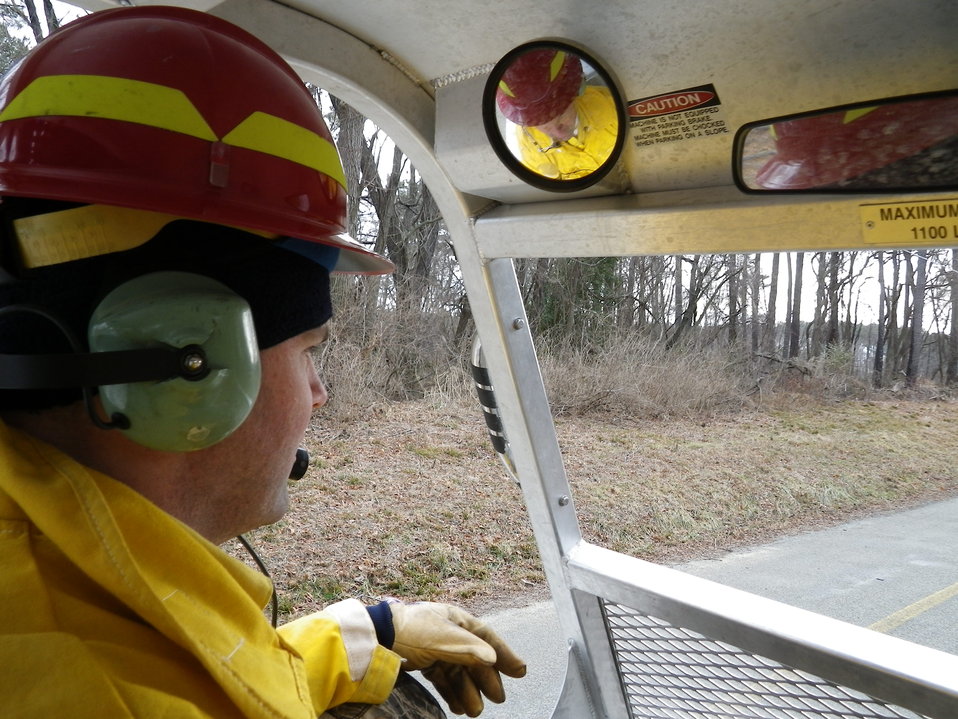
View from inside Marshmaster

March, 2011, Eastern Neck National Wildlife Refuge, Maryland. A firefighter drives a tracked, amphibious Marshmaster during a controlled burn at Eastern Neck National Wildlife Refuge. Safety is the first priority in fire operations. Note the firefighter's protective hard hat, ear muffs, fire resistant shirt, and gloves.